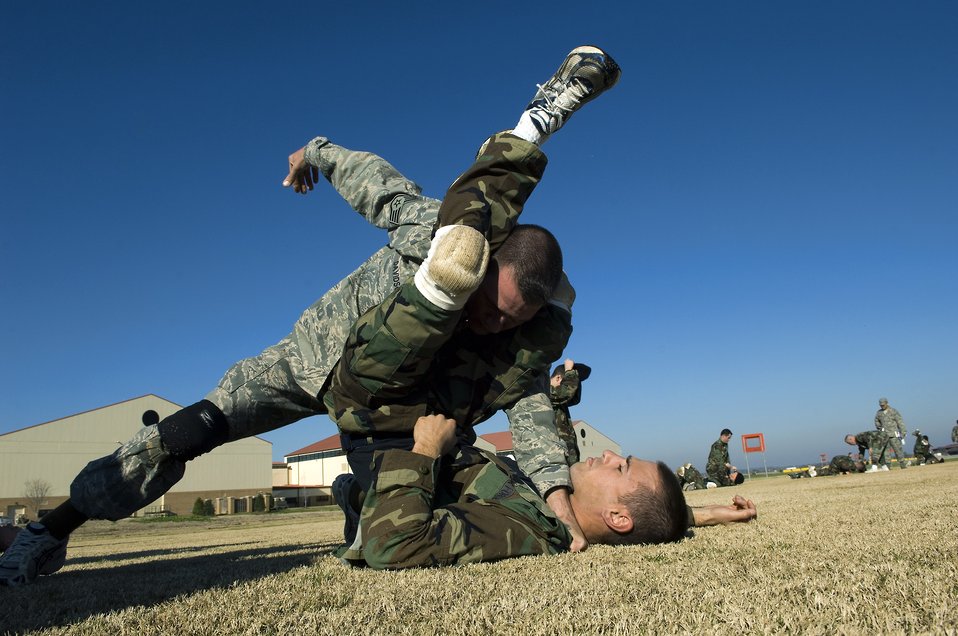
Making the right moves

Staff Sgt. Christopher Davidson, a military training instructor, demonstrates proper grappling procedures with an officer trainee Feb. 8 during the new Air Force Combative Program field exercise at the Officer Training School at Maxwell Air Force Base, Ala.